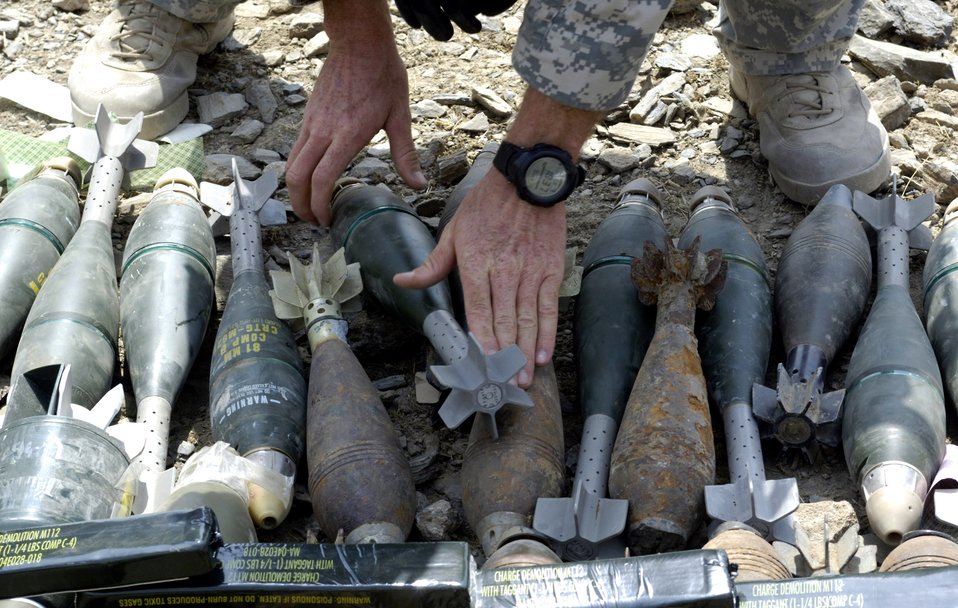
Small rewards program results in big explosion

An Air Force explosive ordnance disposal specialist from Forward Operating Base Mehtar Lam, Afghanistan, readies ammunition for a controlled detonation Sept. 1. Nearly 900 pounds of small arms ammunition, rocket-propelled grenades and mortars were turned in by provincial citizens.